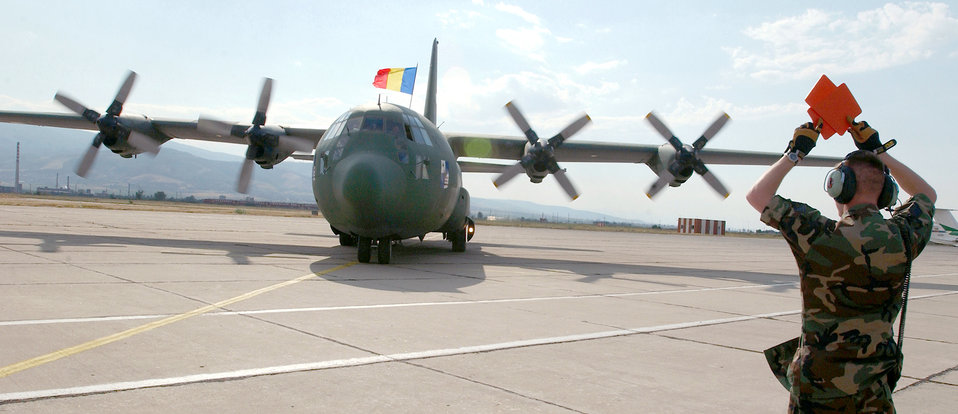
Over here

PLOVDIV, Bulgaria -- Staff Sgt. Justin Neiderhofer marshalls a Romanian C-130 cargo aircraft at Krumovo Airport here Sept. 1 as part of Cooperative Key 2003. Neiderhofer is a crew chief assigned to the 86th Air Mobility Squadron deployed from Ramstein Air Base, Germany. Cooperative Key is a multinational exercise designed to enhance the interoperability of NATO and partner nation air forces through cooperation and familiarization of the organization's procedures.